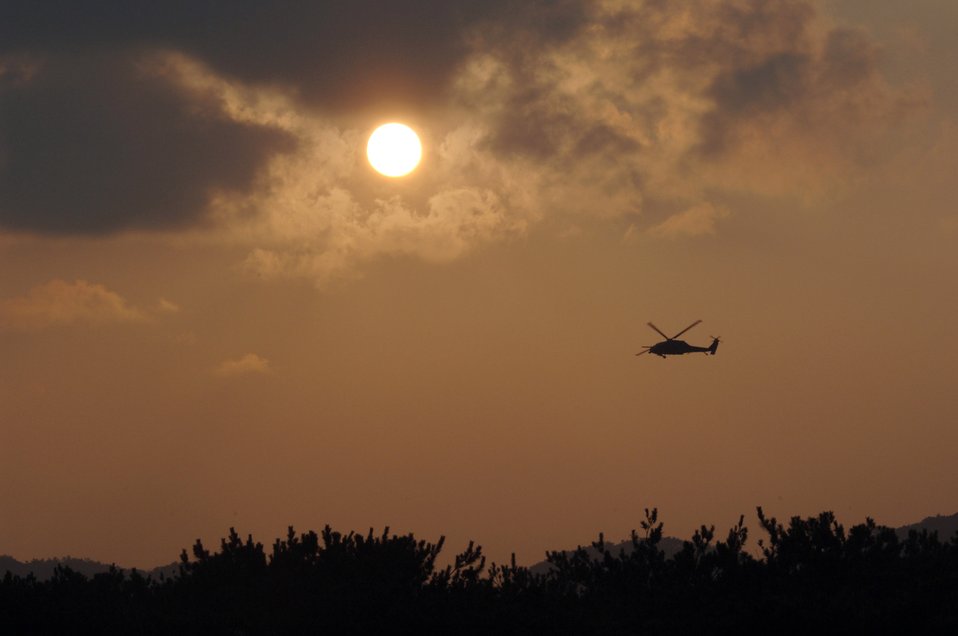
Airmen join Sailors, Marines for JASEX 05

KADENA AIR BASE, Japan -- An HH-60G Pave Hawk prepares to land during Joint Air and Sea Exercise 2005 here. Air Force and Navy HH-60G helicopters